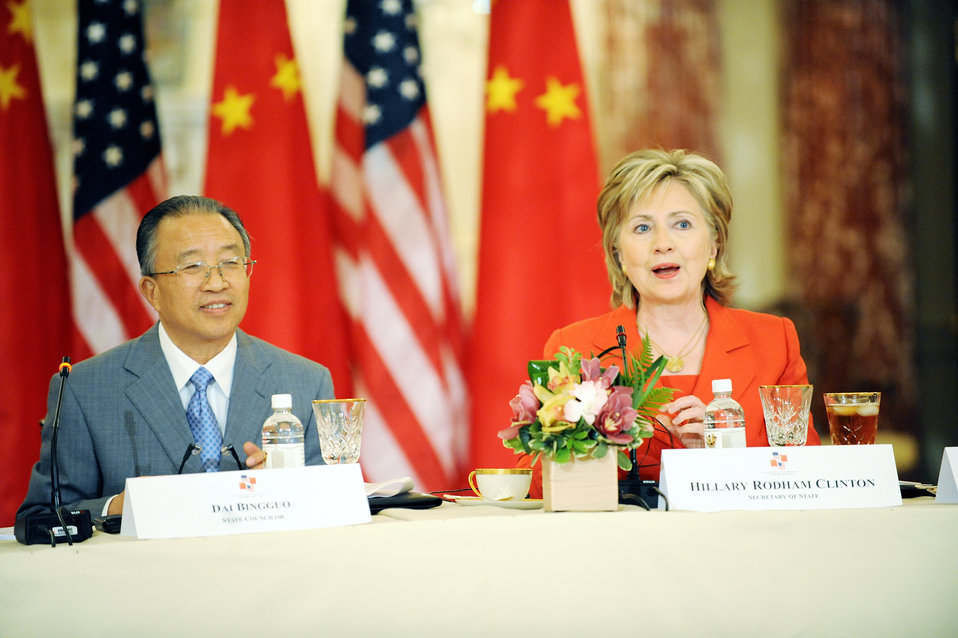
U.S.-China Strategic and Economic Dialogue

U.S. Secretary of State Hillary Rodham Clinton during a meeting with Chinese State Councilor Dai Bingguo in the Treaty Room of the U.S. Department of State July 28, 2009.